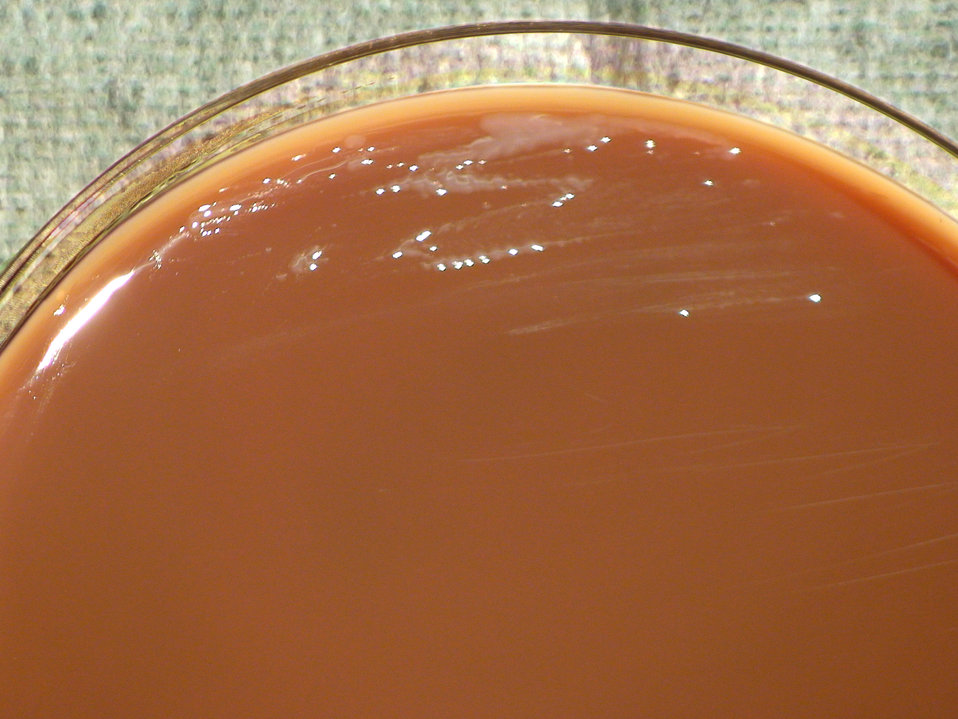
As a closer view of PHIL 12437, this photograph depicts the colonial morphology displayed by Gram-negative Francisella tularensis bacteria, which was grown on a medium of chocolate agar, for a 24 hour time period, at a temperature of 37�C. Take a look at PHIL 12439 depicting the appearance of F. tularensis colonies grown on the same medium, and at the same temperature, but for twice the time (48hr). Also see both PHIL 12440 and 12441, for the appearance of bacterial colonies, again, grown on the same medium, and at the same temperature, but for three times the time period (72hr).